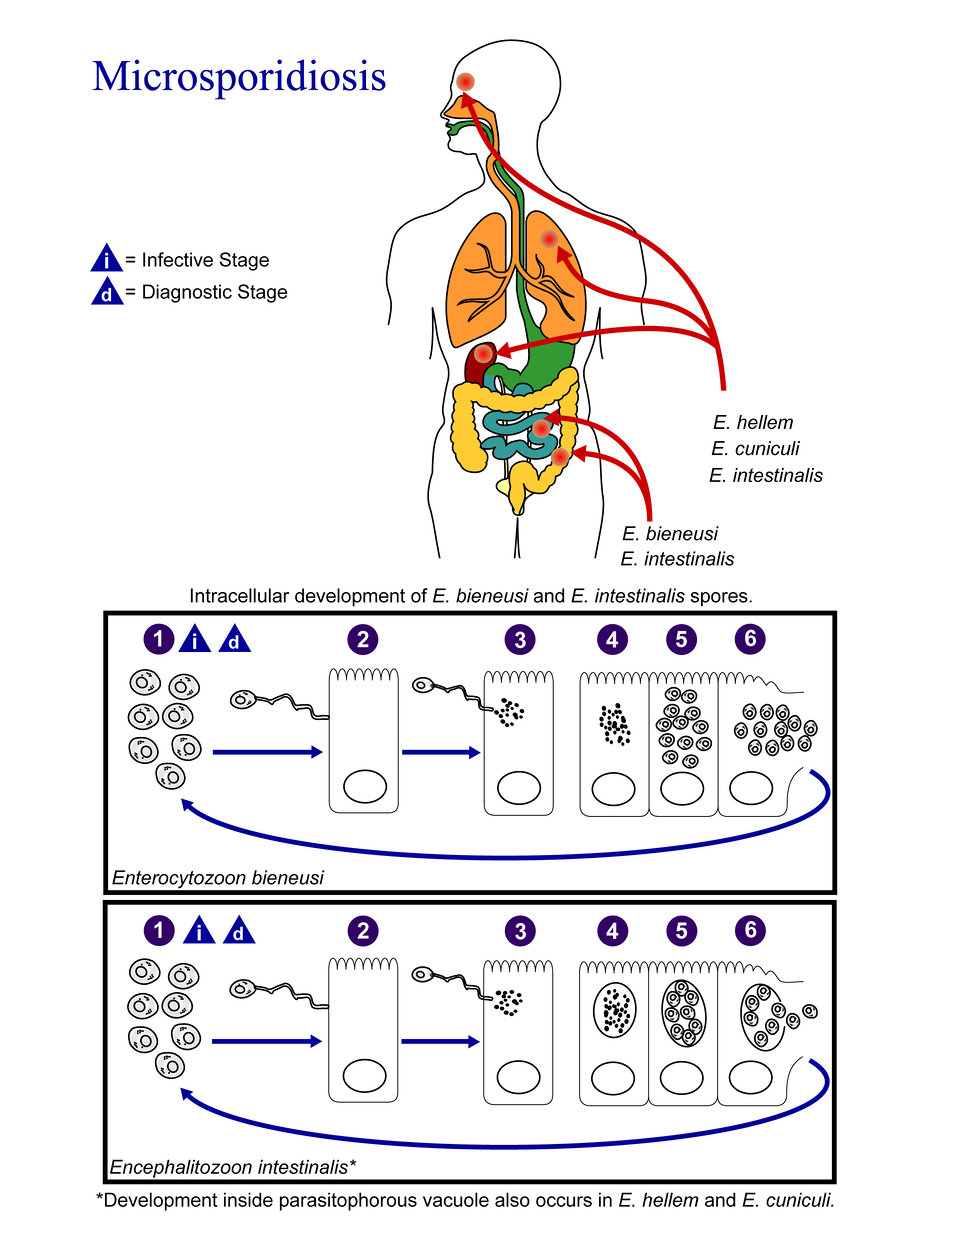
This is an illustration of the life cycle of the agents responsible for causing Microsporidiosis.